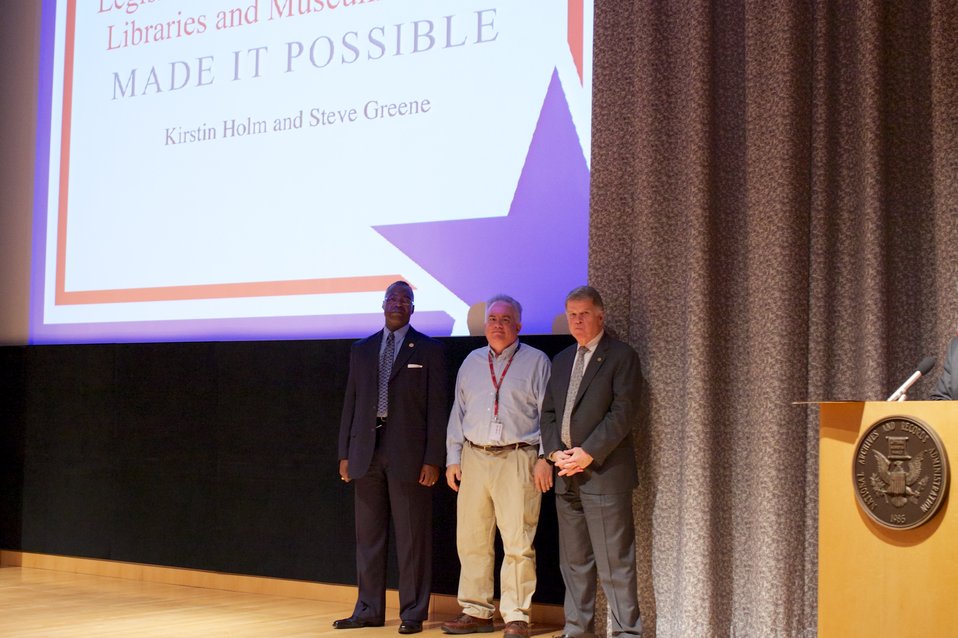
CFC Recognition Event